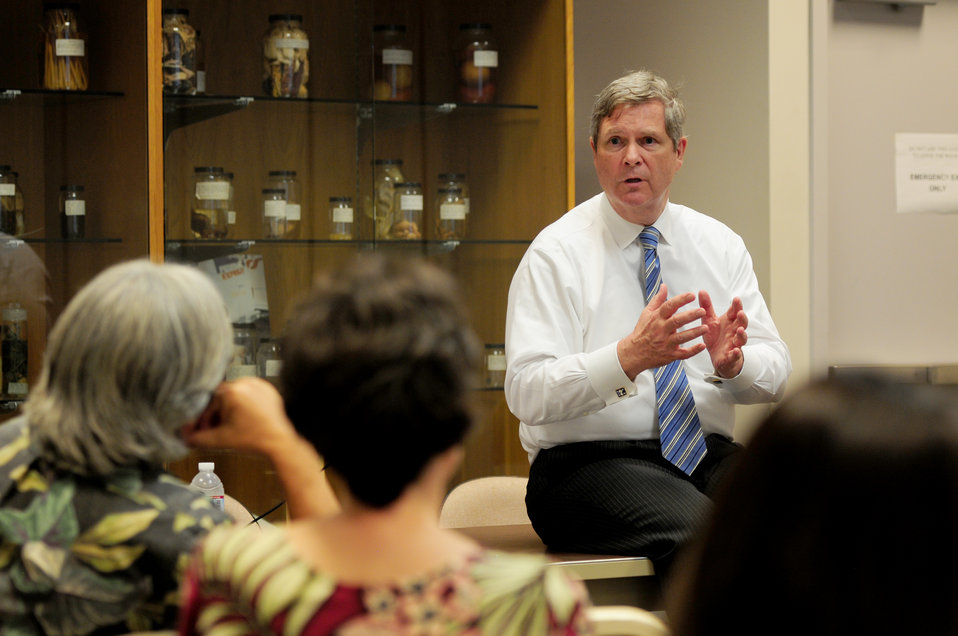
Agriculture Secretary Tom Vilsack speaks at a stakeholder meeting held at the State of Hawaii, Department of Agriculture Plant Quarantine Building in Honolulu, Hawaii, on Tuesday, January 10, 2012, to discuss USDA programs, agricultural challenges in Hawaii, and alternative energy.